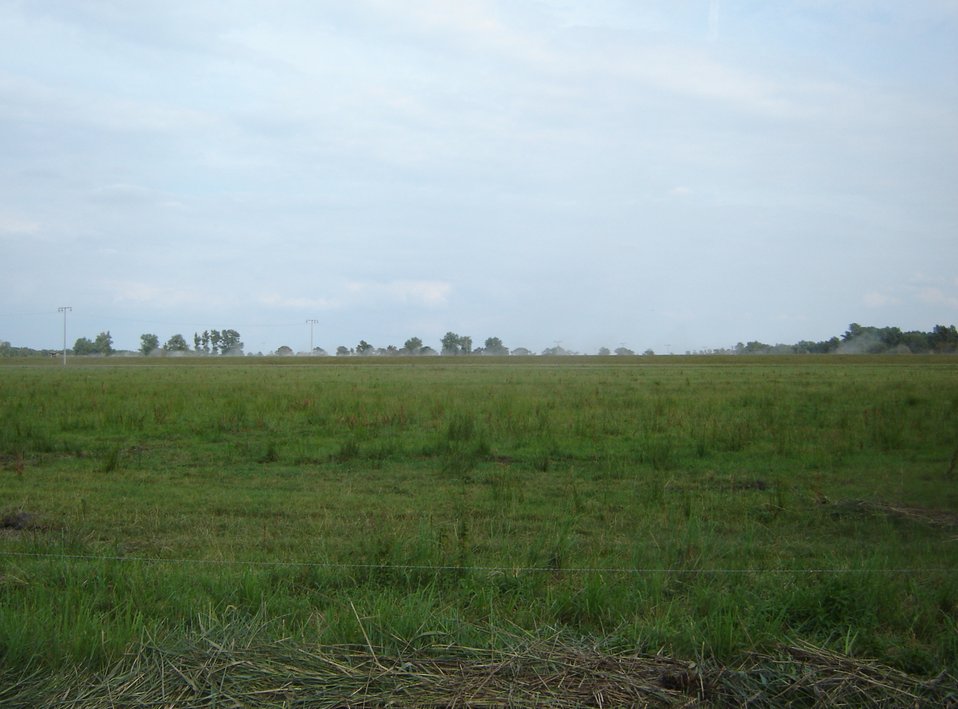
Deutsch: Darß - die Sundische Wiese.